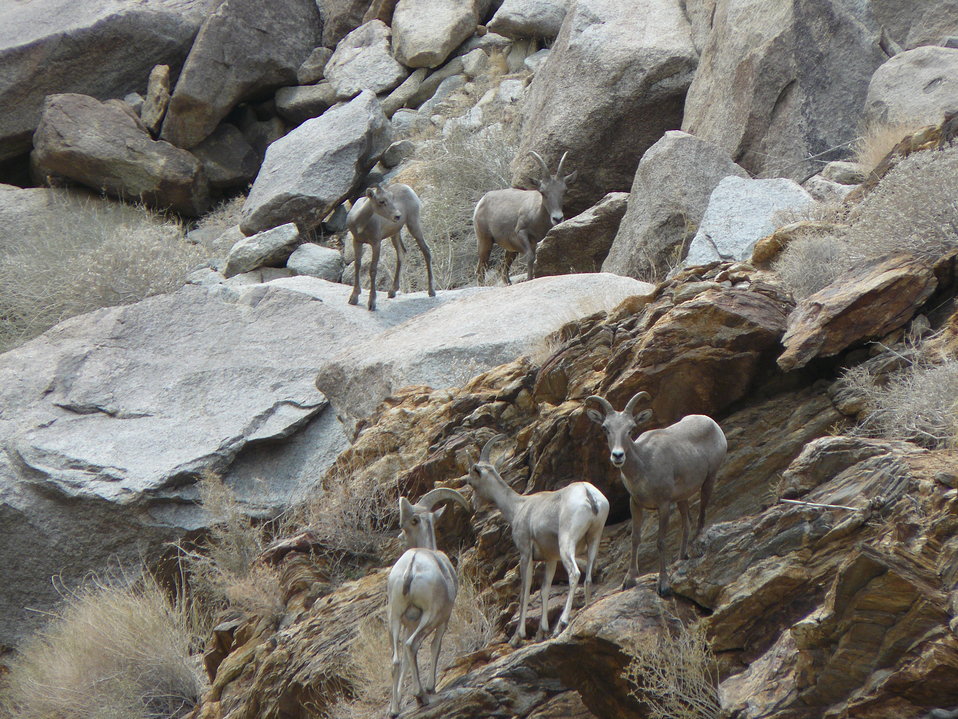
Endangered Peninsular bighorn sheep ewes

Desert bighorn sheep are adept at navigating steep, rocky terrain.